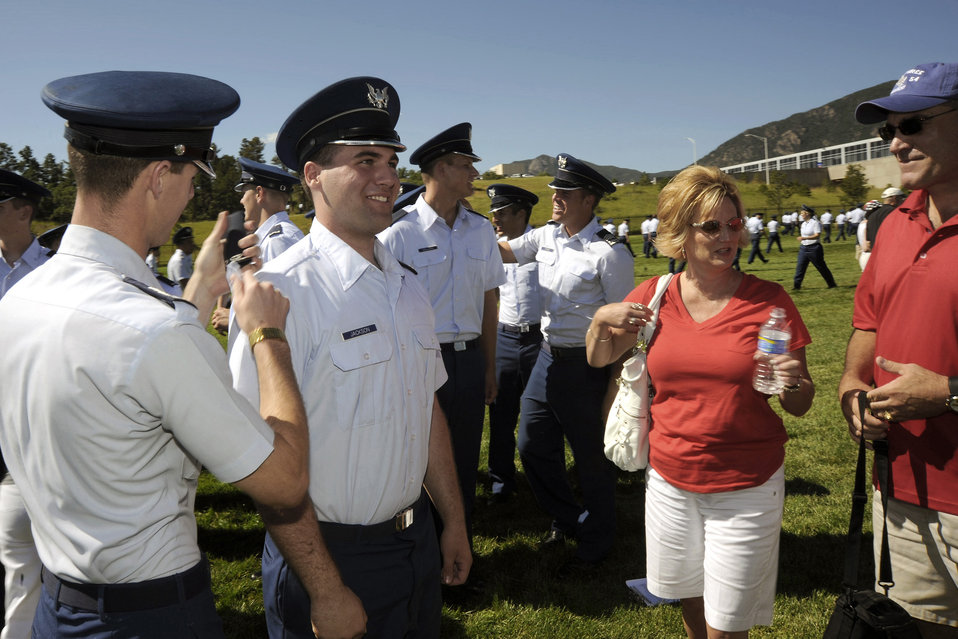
Academy acceptance parade

U.S. Air Force Academy Cadet 4th Class Jackson has his new rank placed on by upperclassman following the Acceptance Parade Aug. 5 at the Academy in Colorado. The parade marks the official end of Basic Cadet Training and formally welcomes the new class into the cadet wing. Cadet Jackson is a member of the Academy's Class of 2013.